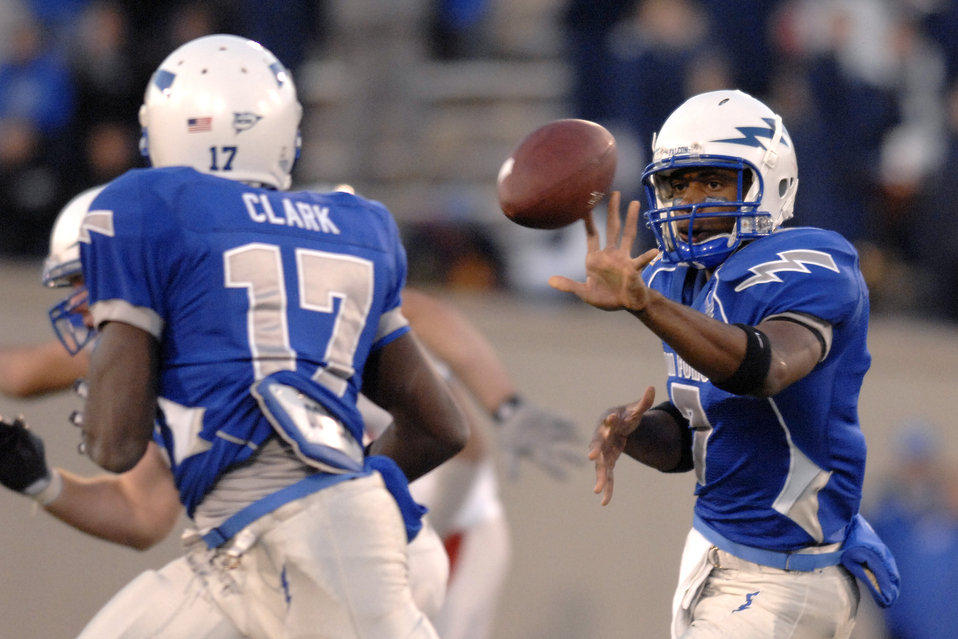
Football: Opportunistic Falcons topple New Mexico

U.S. Air Force Academy freshman quarterback Tim Jefferson options to freshman tailback Asher Clark. The Falcons' option rushing attack ground out 227 yards in a 23-10 win over University of New Mexico Oct. 23 at Falcon Stadium in Colorado . With the win, the Falcons are now 6-2 and bowl eligible. The Academy returns to the gridiron Nov. 1 when it takes on Army at West Point.